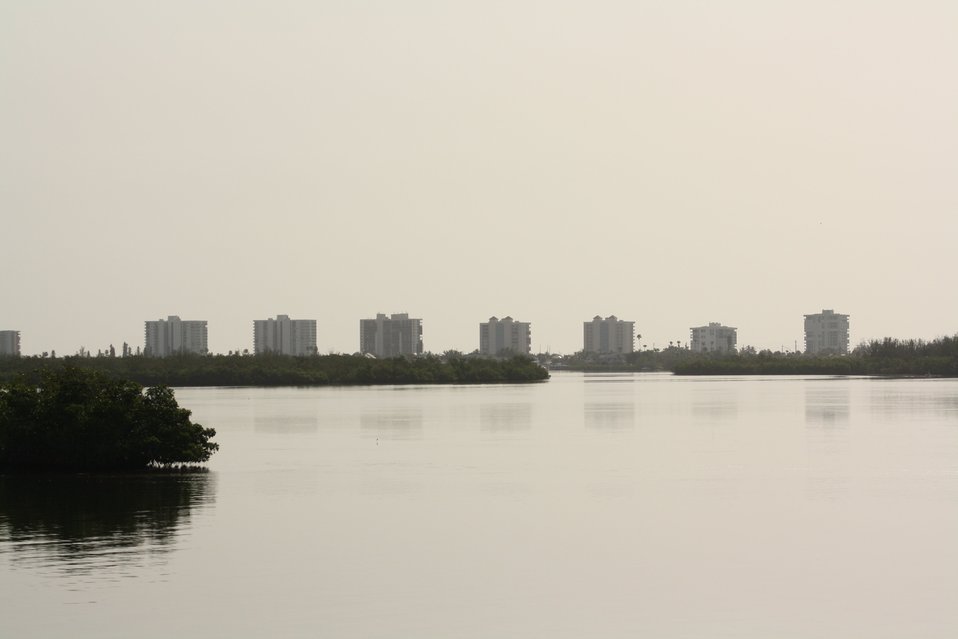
A herd of apartment buildings at Fort Pierce.